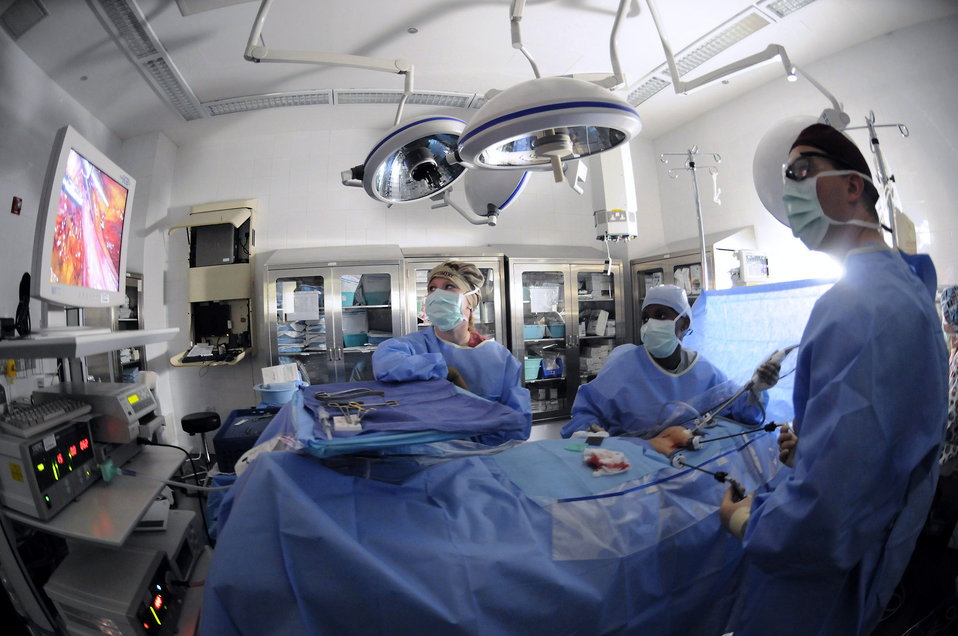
Surgeons return injured troops to action

Senior Airman Cara Montgomery watches the monitor as Senior Airman Brittney Hardrick controls a camera so Dr. (Maj.) Craig Kolasch, general surgeon, can see inside a patient during a laparoscopic hernia repair. All Airmen are assigned to the 379th Expeditionary Medical Group. Airman Montgomery is a surgical technician. Airman Hardrick is a cardio pulmonary technician. All are deployed from Keesler Air Force Base, Miss., in support of Operations Iraqi and Enduring Freedom and Joint Task Force-Horn of Africa.